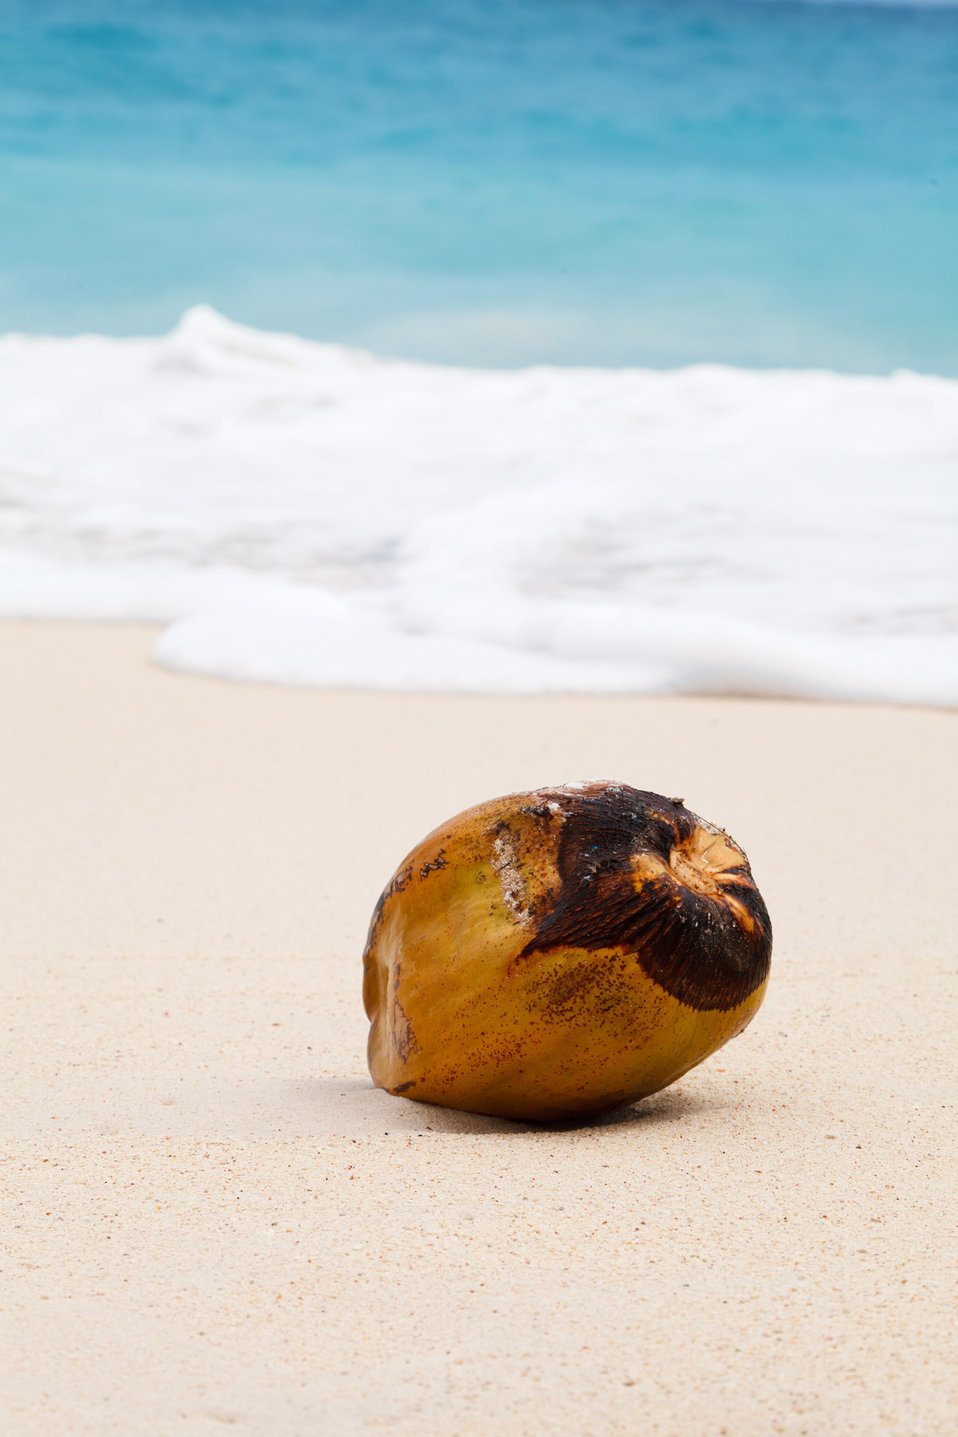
Coconut on beach in sand.